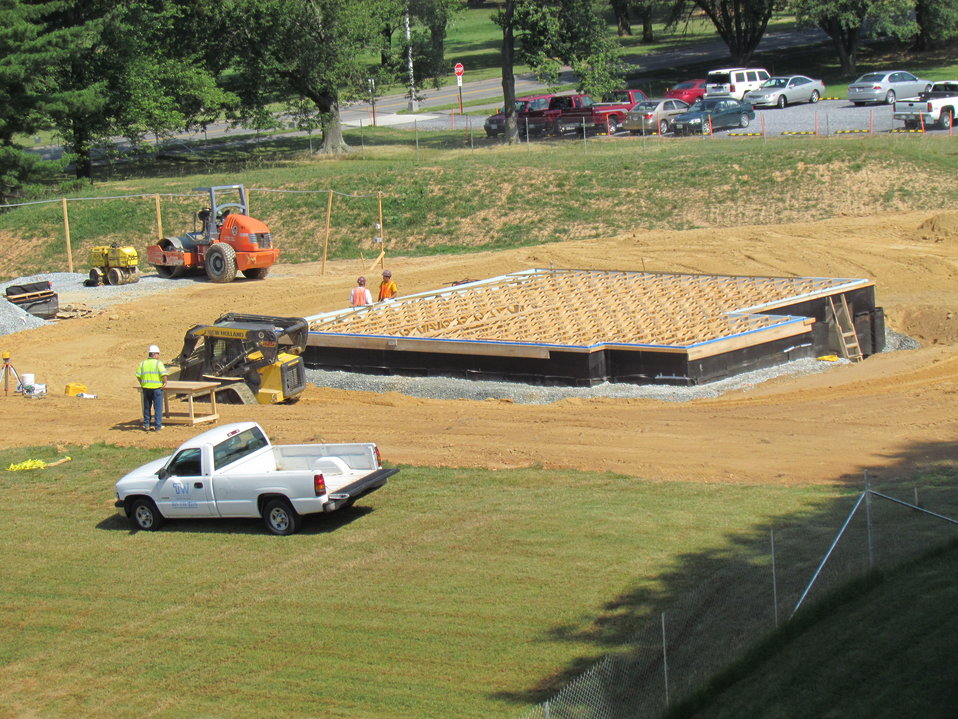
Net-Zero Energy Residential Test Facility - Picture showing open web first floor web trusses in place.